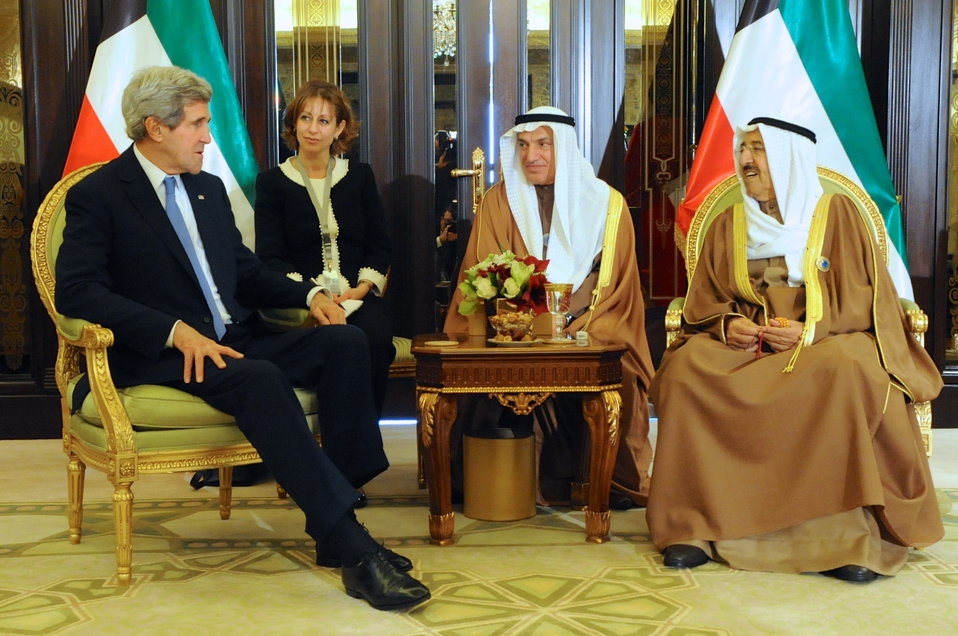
Secretary Kerry Meets With Amir of Kuwait at Syria Donors' Conference

U.S. Secretary of State John Kerry speaks with Amir Sheikh Sabah al-Ahmed Al Sabah of Kuwait during a pull-aside discussion amid the Syria Donors' Conference in Kuwait City on January 15, 2014.